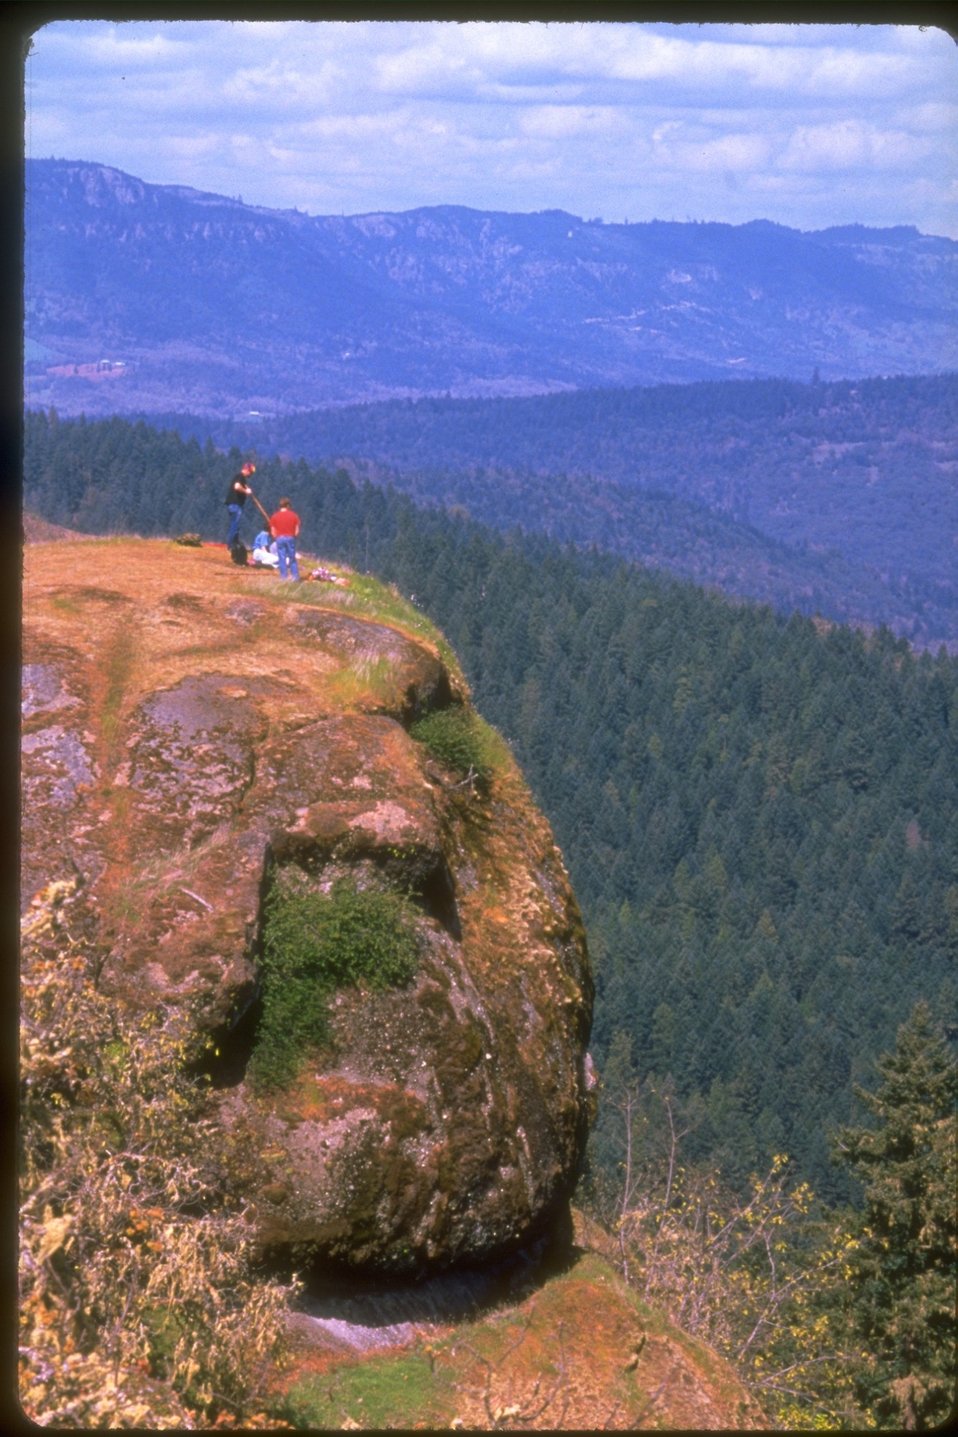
Someone hiking on "The Rock.